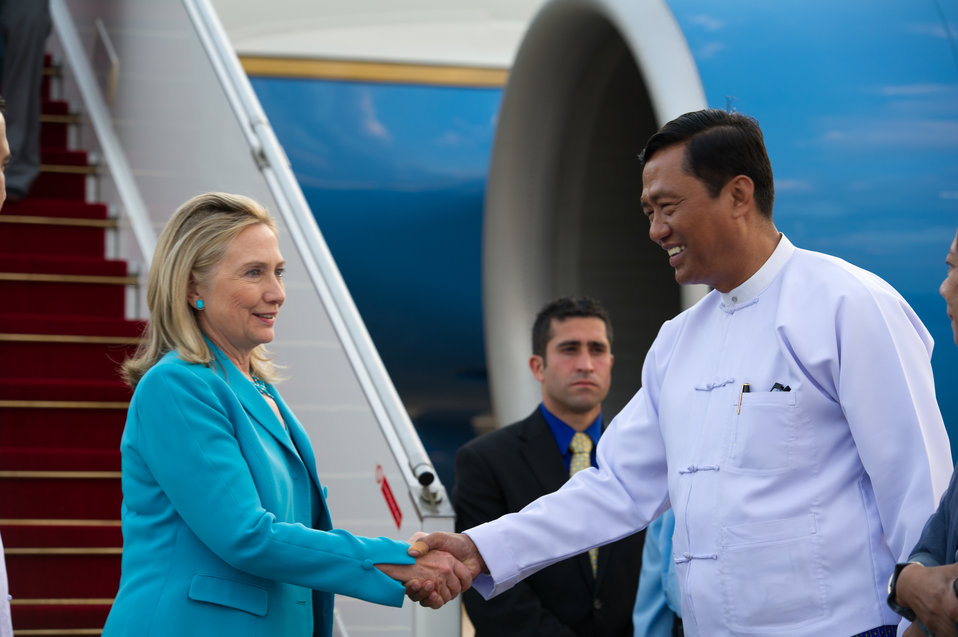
Secretary Clinton Arrives in Rangoon

U.S. Secretary of State Hillary Rodham Clinton arrives in Rangoon from Nay Pyi Taw to continue her historic visit to Burma on December 1, 2011.